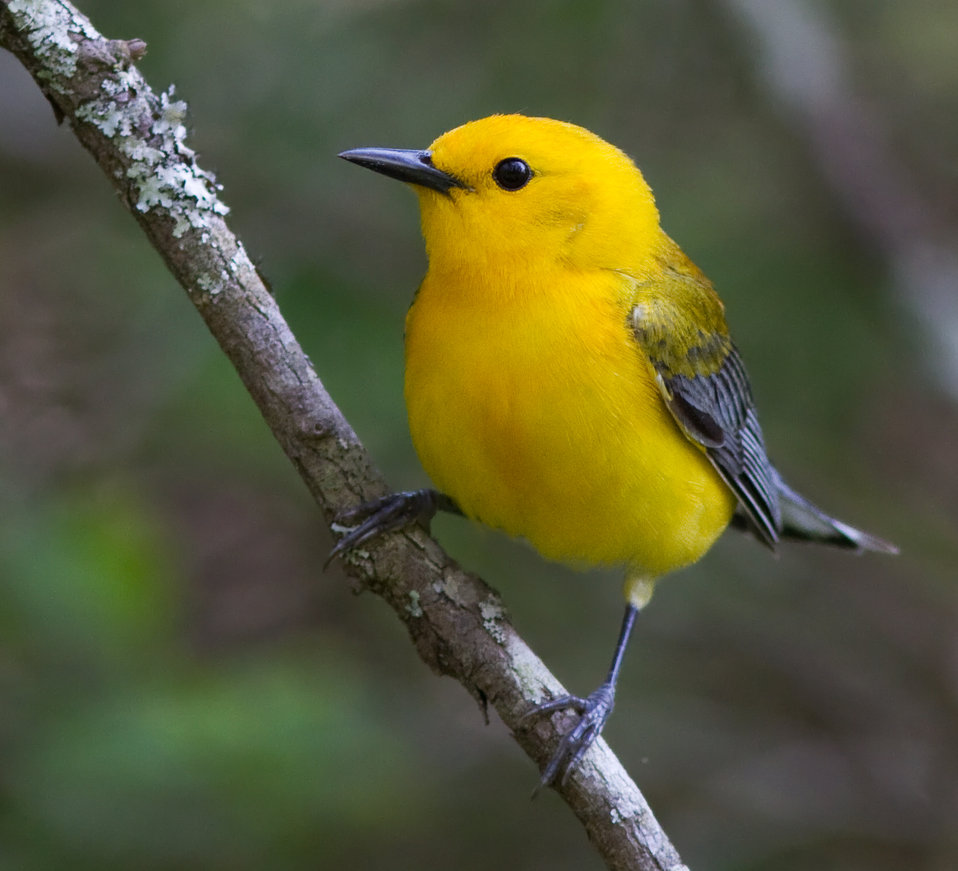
Prothonotary warbler

Great Dismal Swamp National Wildlife Refuge.